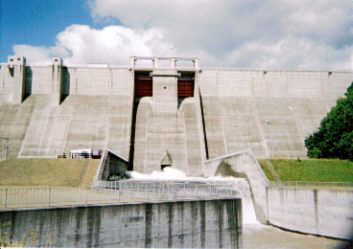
Dam